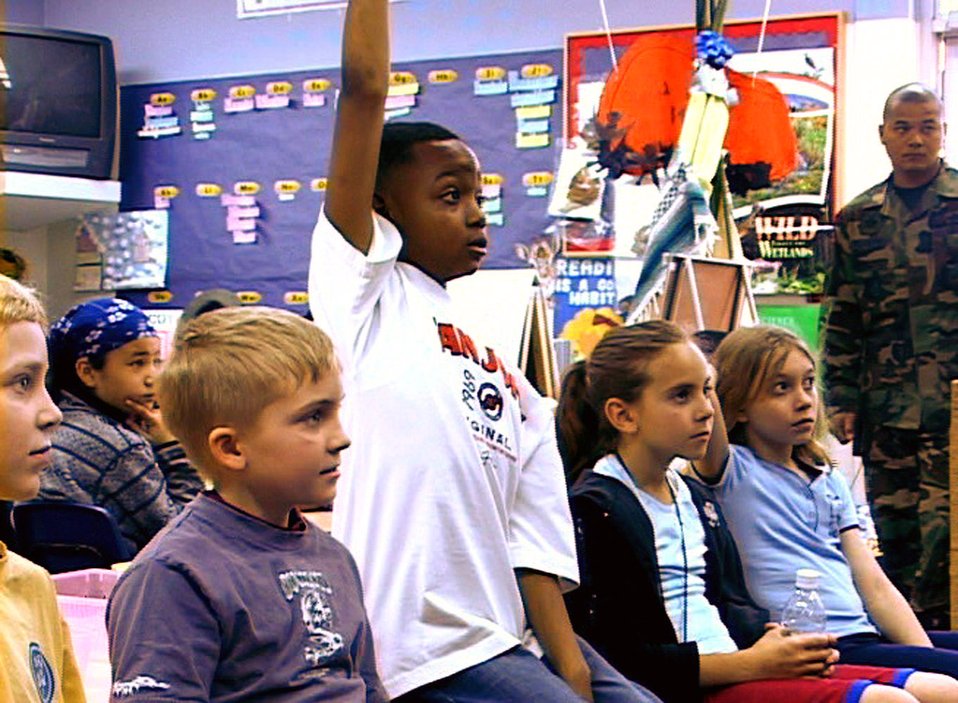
Month of the Militry Child kicks off with career day

Elijah Wood, a 4th grade student at Yokota Air Base, Japan's West Elementary School, raises his hand March 30 to ask a fire fighter a question at the school's annual career day. The career day kicked off April being the